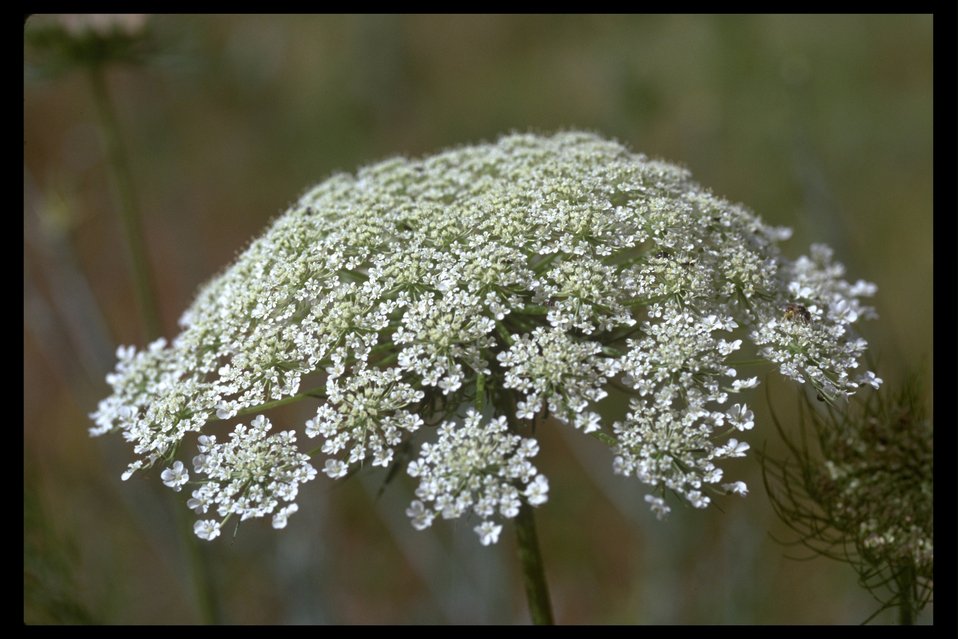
Queen Anne's Lace (Daucus carota) along Crowfoot Road.